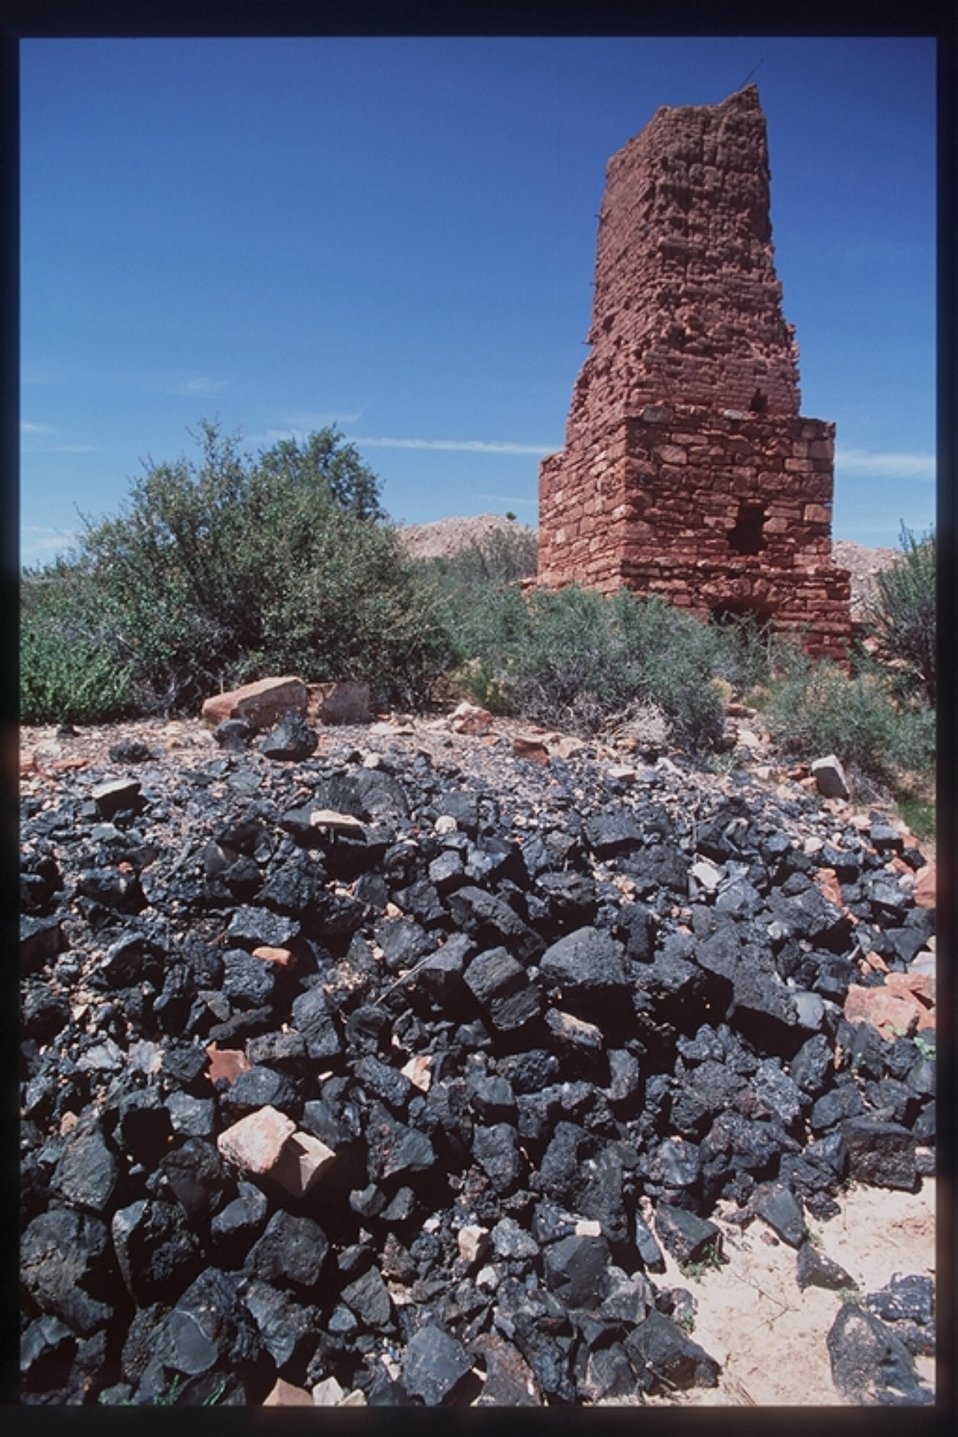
The Grand Canyon-Parashant National Monument was designated by President Clinton in January 2000. The monuments remote open, undeveloped area and engaging scenery is located on the edge of the Grand Canyon.